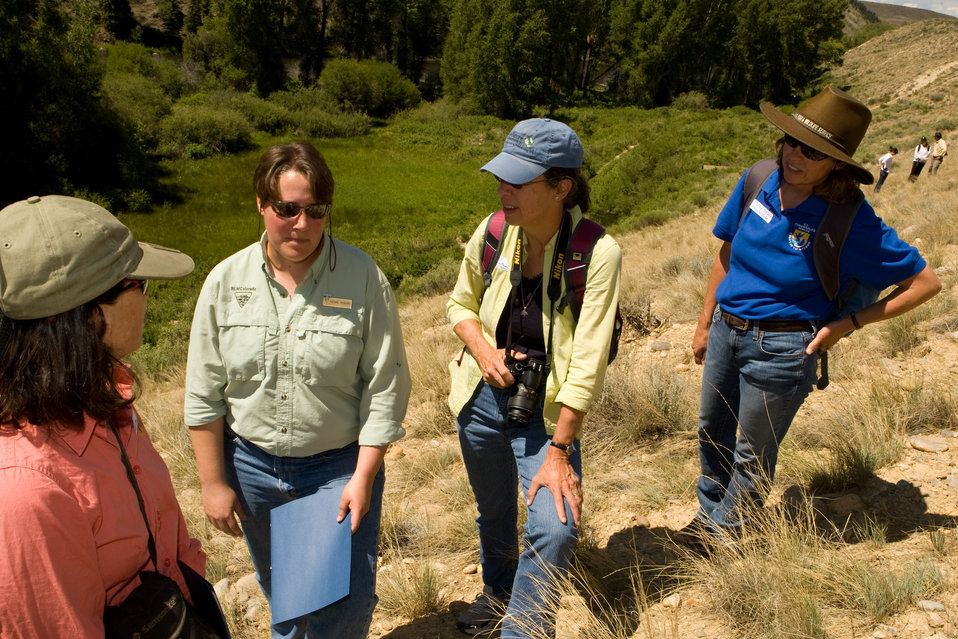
Colorado Rare Plant Conservation Initiative

The Colorado Rare Plant Conservation Initiative (RPCI) is a partnership of 23 statewide and regional agencies, private organizations, and academic institutions working to conserve 121 rare plants in Colorado. As part of these efforts the group developed the Colorado Rare Plant Conservation Strategy, developed Best Management Practices to reduce energy development impacts, addressed climate change, and developed focused strategies for the conservation of individual species at eight priority landscapes. The group has also worked to coordinate volunteer efforts for plant conservation across the state.